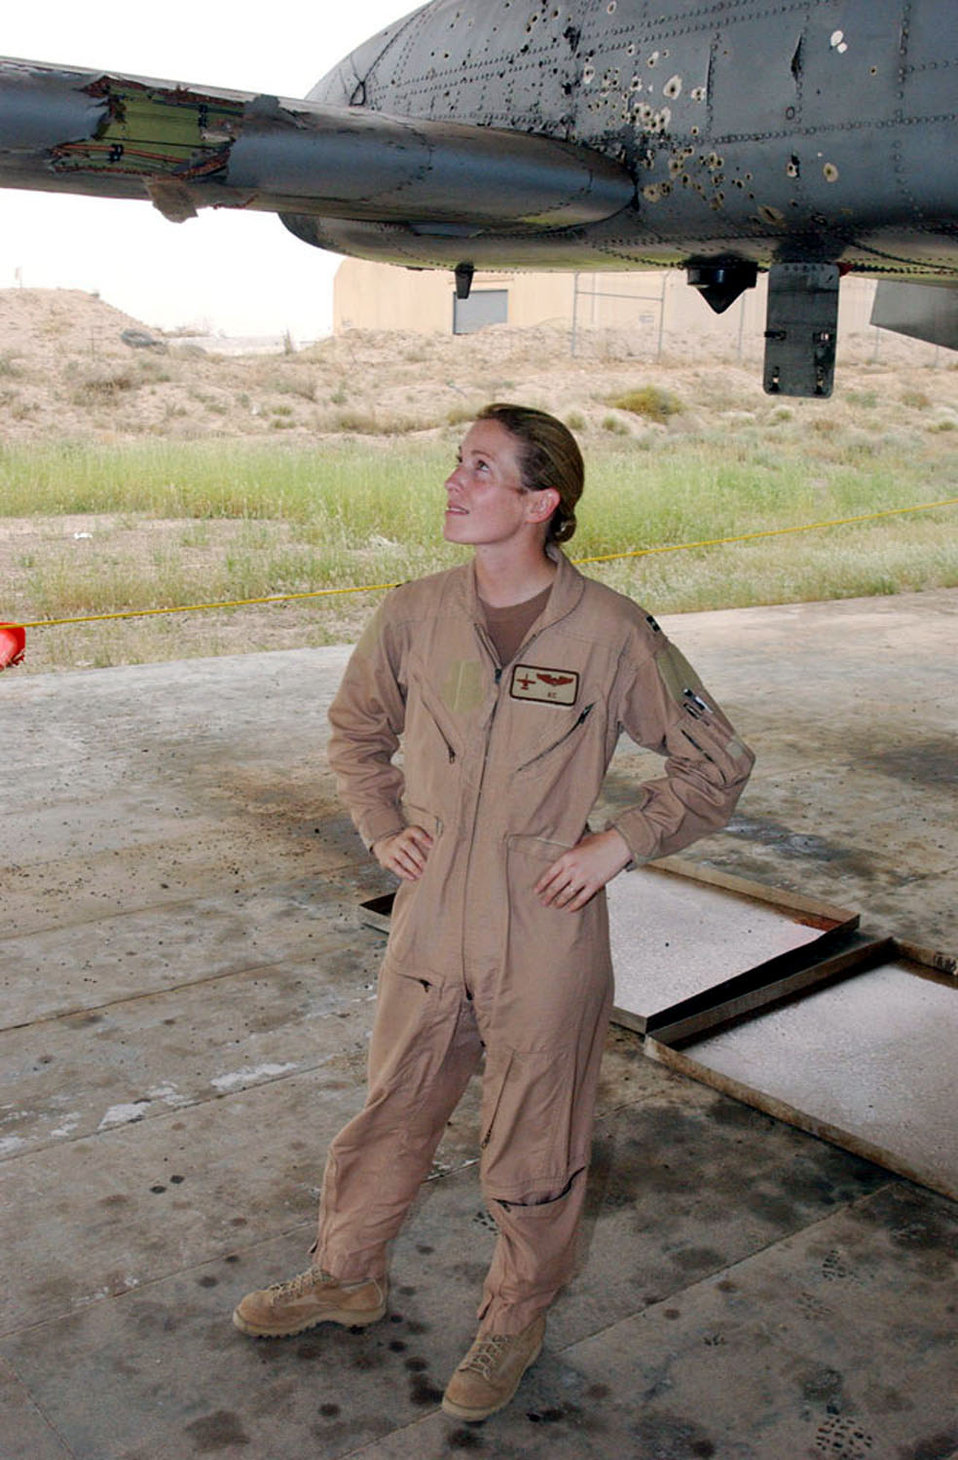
Warthog out of battle

OPERATION IRAQI FREEDOM -- Capt. Kim, an A-10 Thunderbolt II pilot deployed with the 332nd Air Expeditionary Wing, surveys the battle damage to her airplane. Kim's A-10 was hit over Baghdad during a close air support mission on April 7.